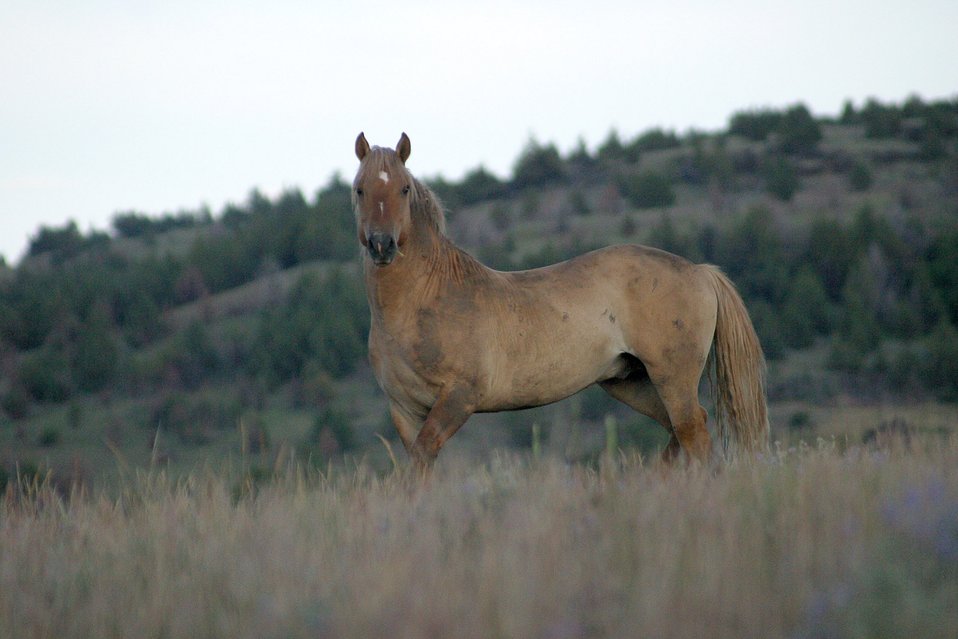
Wild Horse(s) in the Kiger Wild Horse Herd Management Area.